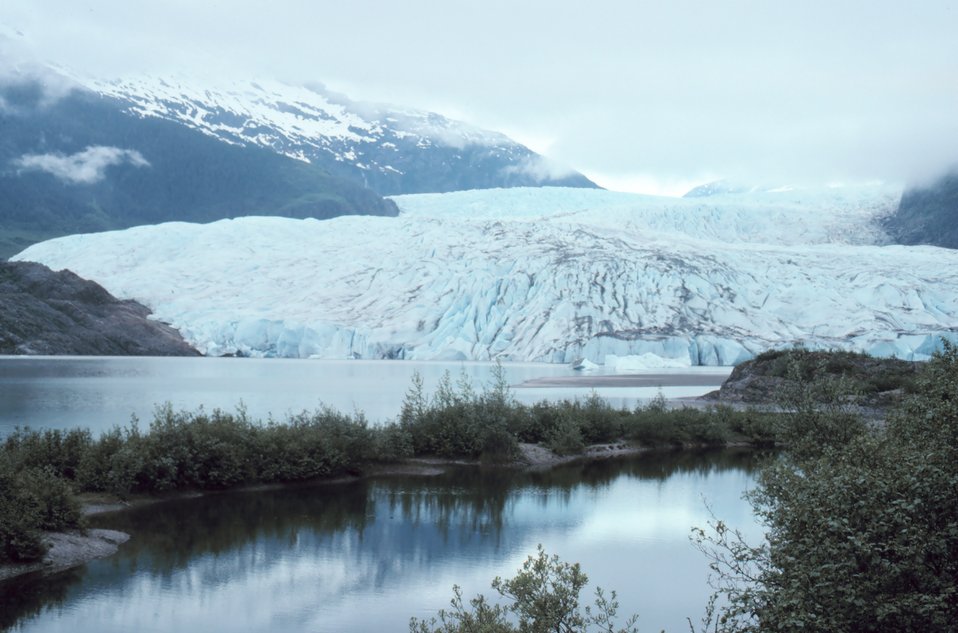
Mendenhall Glacier